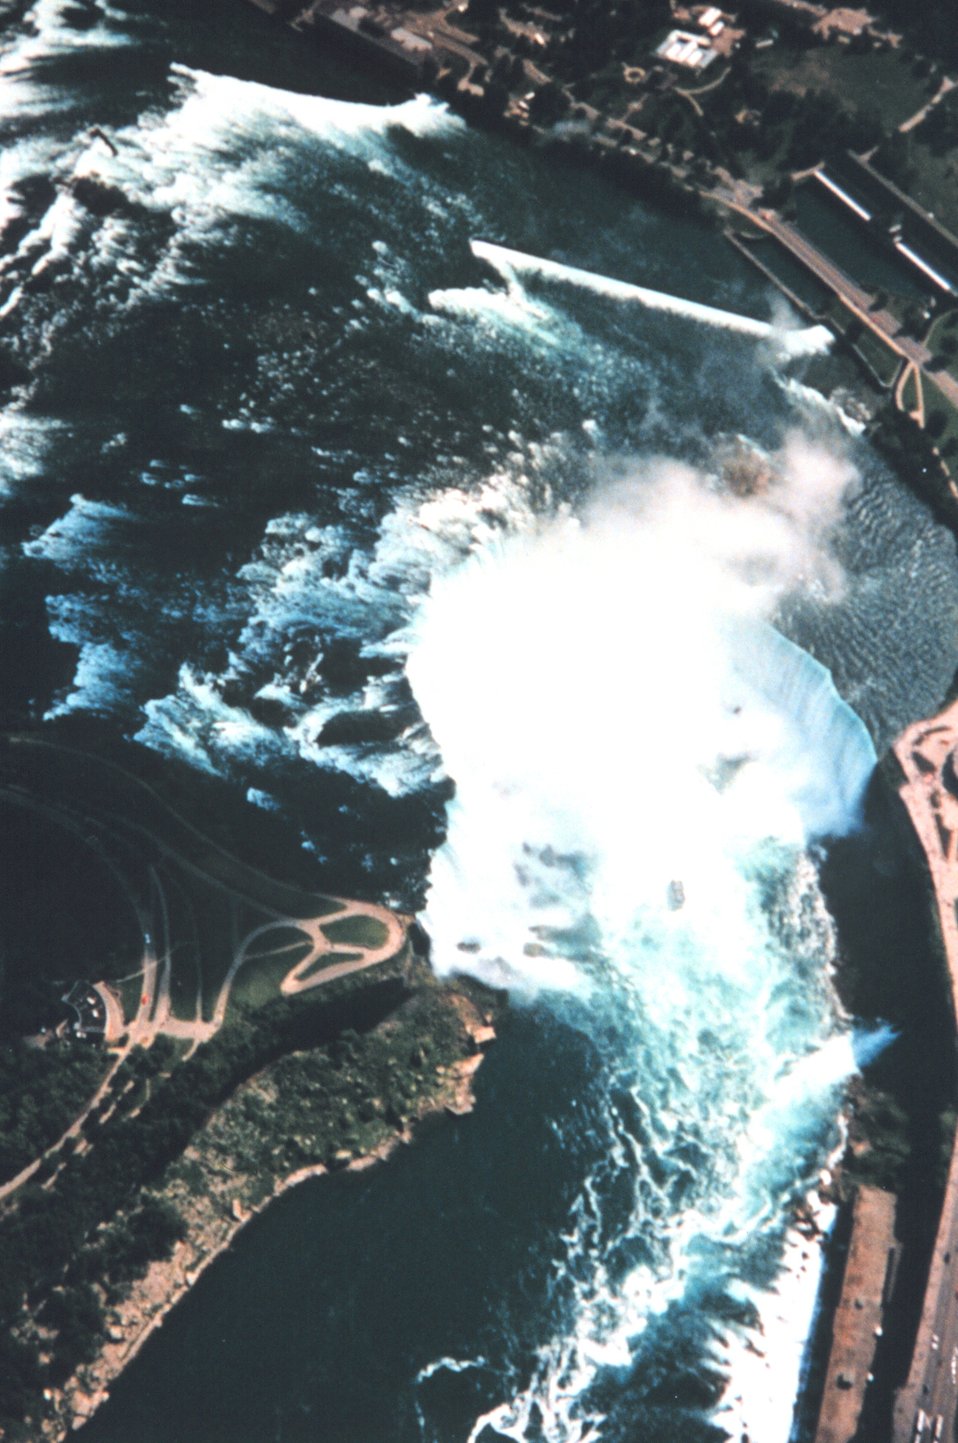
Niagara Falls as seen during Shoals Lidar survey of Niagara River.